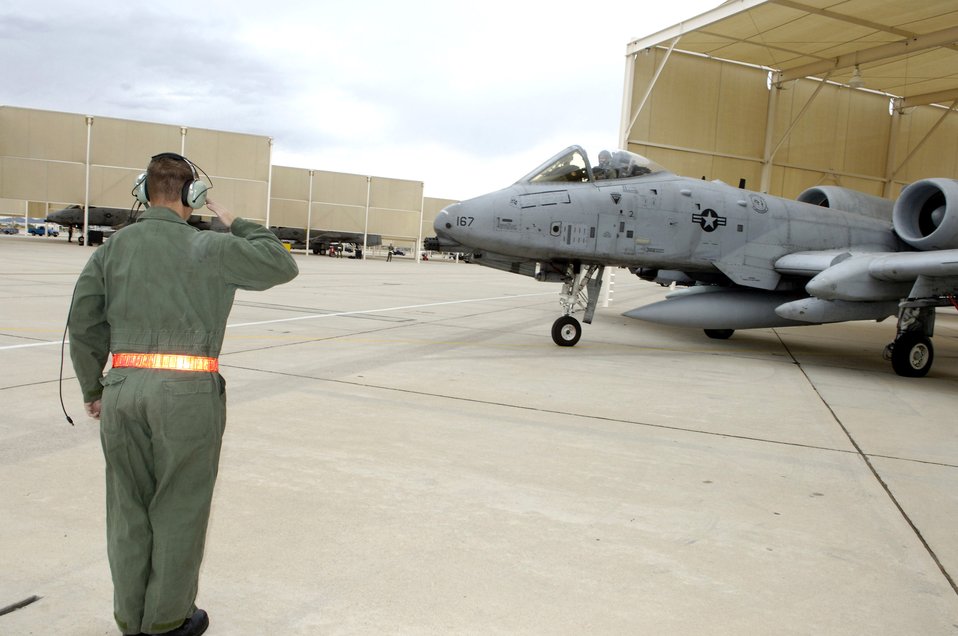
Taking an A-10 from pre-flight to flight

Tech. Sgt. Jerome Westbrook salutes as Capt. Andrew Tenenbaum taxis his A-10 Thunderbolt II Oct. 29. Sergeant Westbrook is assigned to the 355th Aircraft Maintenance Squadron and Captain Tenenbaum is a pilot in the 354th Fighter Squadron at Davis-Monthan Air Force Base, Ariz.